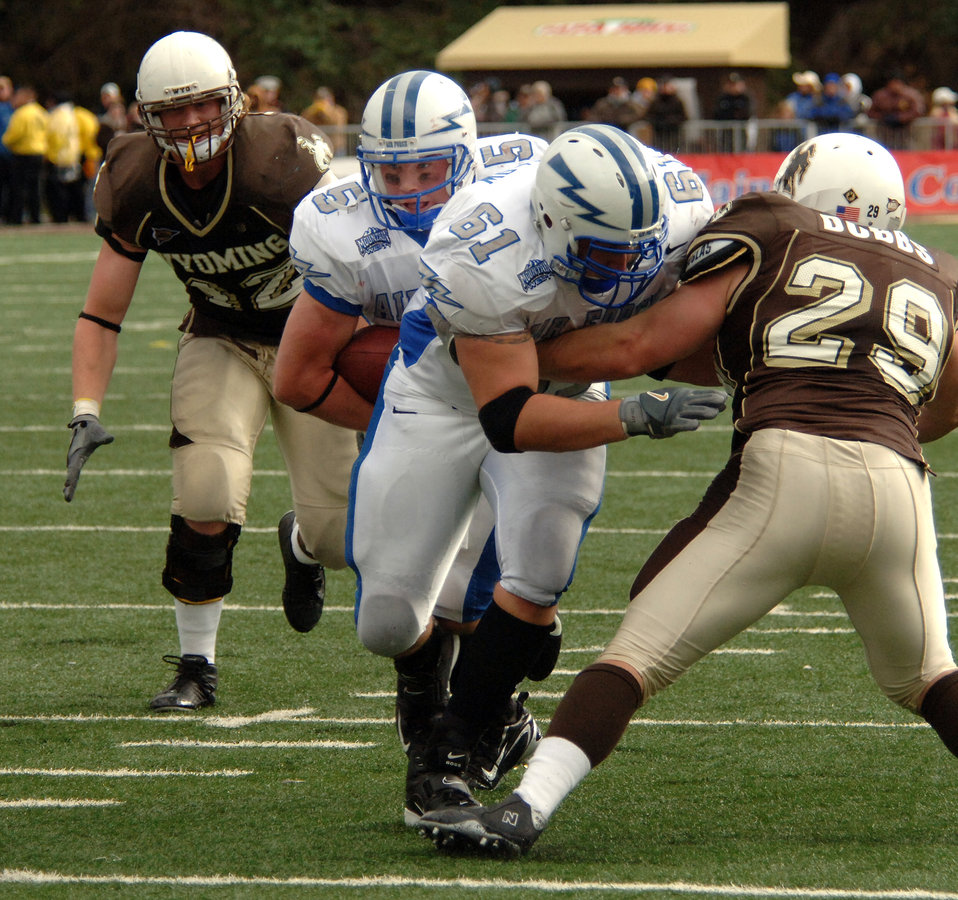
Falcons corral Cowboys in conference opener

Falcons left tackle Tyler Dolhallow (#61) plows a path through Wyoming middle linebacker Ward Dobbs so Falcon quarterback Shaun Carney (#5) can gain yardage up the middle. Carney carried 25 times for 131 yards and two touchdowns during the Falcons' 31-24 win over Wyoming Sept. 23. The Falcons improve their record to 1-1 with this conference win, and will continue Mountain West Conference action Sept. 30 when they battle New Mexico at Falcon Stadium.